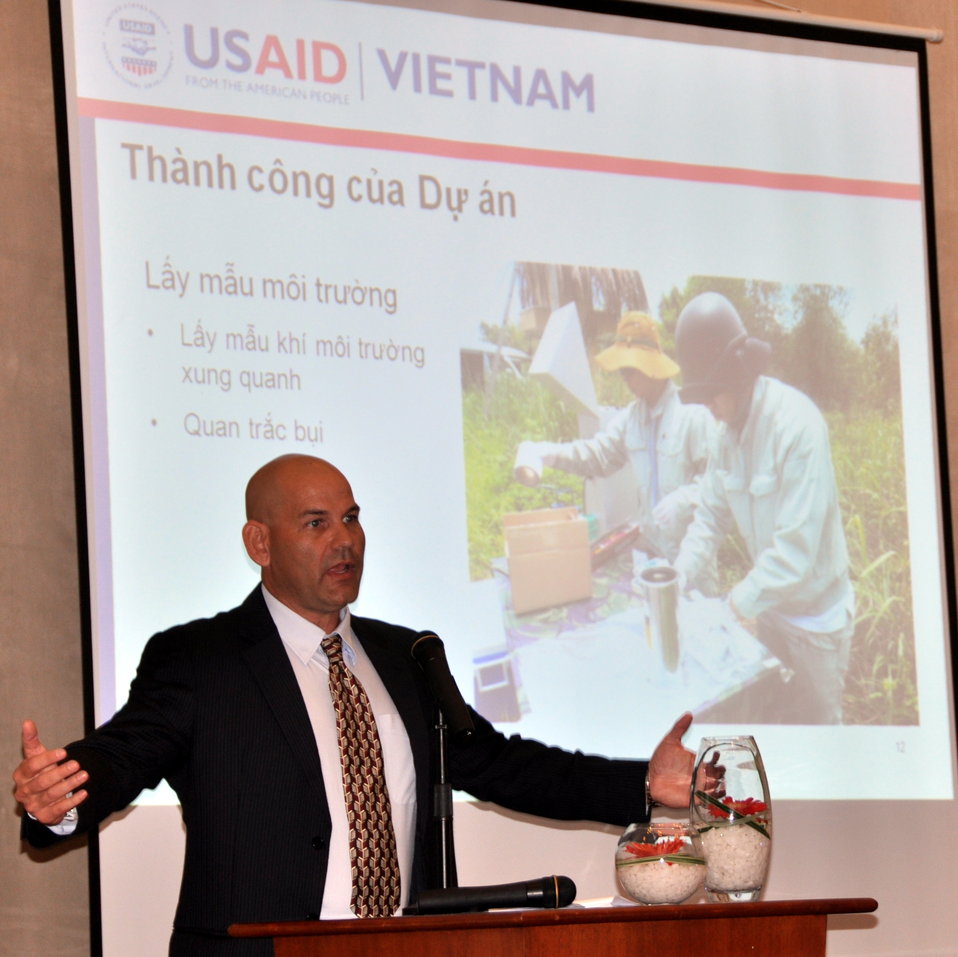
Danang Stakeholder Meeting

Environmental Remediation of Dioxin Contamination at Danang Airport

Danang, Vietnam
January 23, 2013
Photos @USAIDVietnam